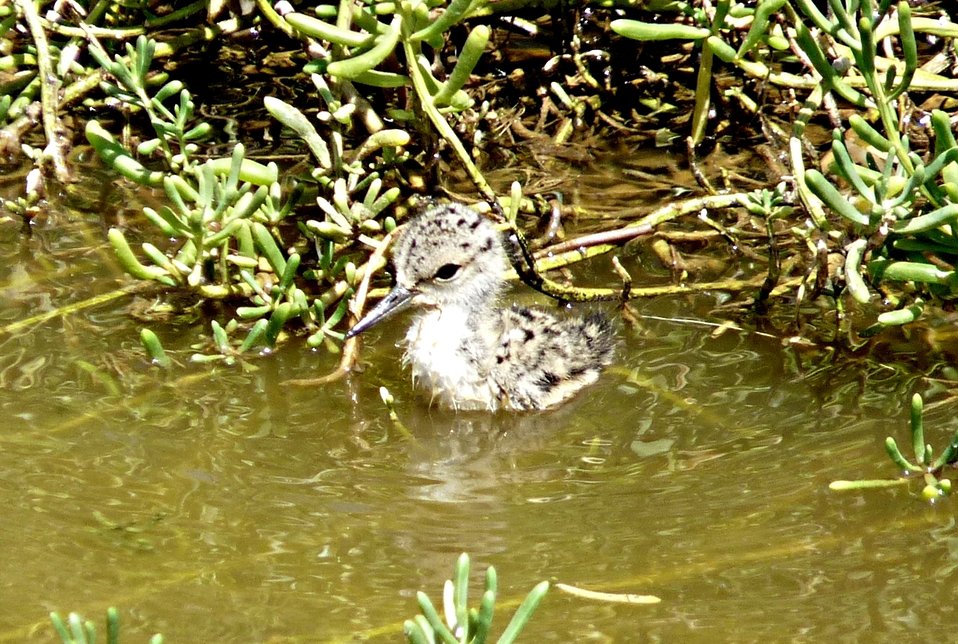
Hawaiian Stilt - ae'o chick - Pearl Harbor NWR